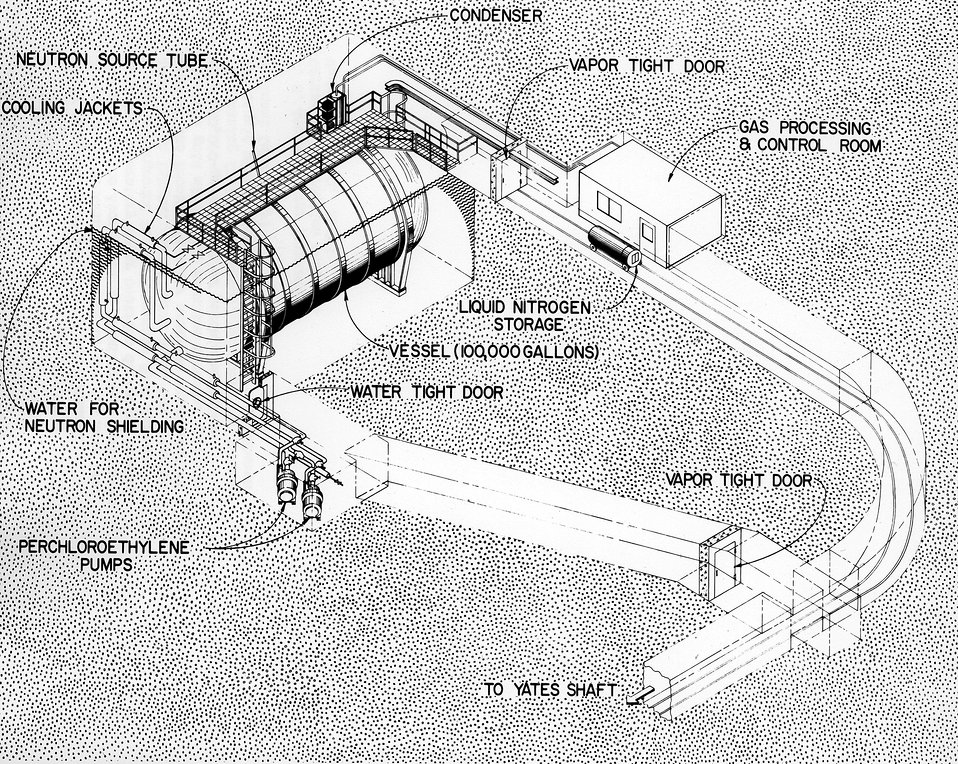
The first chemical detection of neutrinos produced by the sun have been recorded at the Atomic Energy Commission's Brookhaven National Laboratory solar neutrino detector. c. 1972